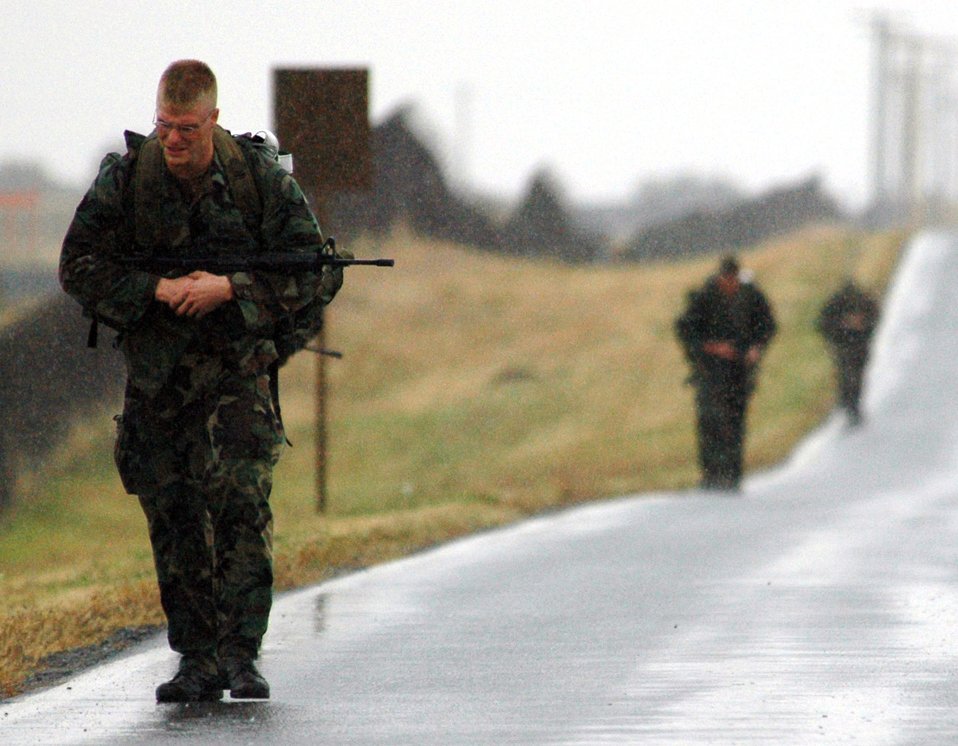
Fairchild Airmen test for Ranger school

FAIRCHILD AIR FORCE BASE, Wash. -- Airmen with the 336th Training Group here haul 65-pound rucksacks on a 14-mile march as part of their Ranger School test. Successful completion of this test will advance them as candidates to pre-Ranger School. The march is only a portion of the 12-hour test they had to finish.